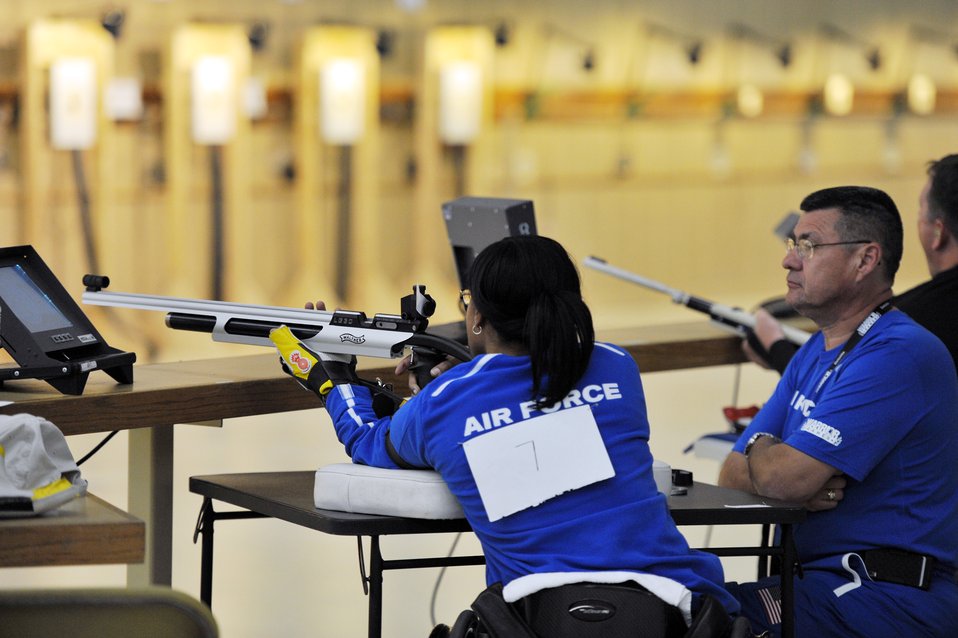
prelims shooting competition

Chatriex Goodson prepares to take aim in the shooting competition of the 2011 Warrior Games May 17, 2011, at the U.S. Olympic Training Center in Colorado Springs, Colo. More than 200 wounded warriors from all the military services are competing in Paralympic-style athletic events May 16 through 21.